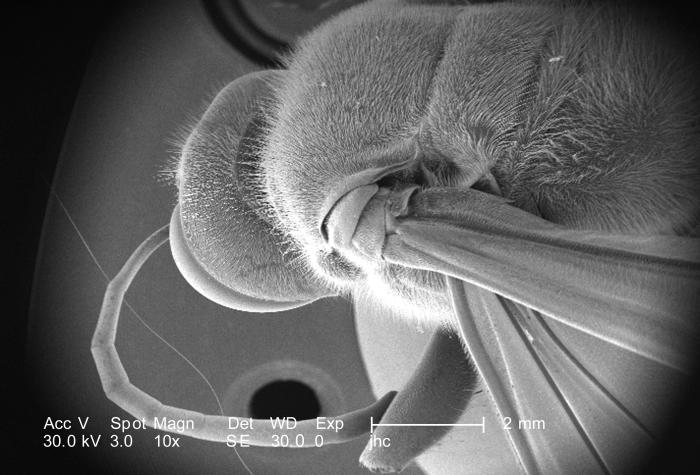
Under a very low magnification of only 10X, this scanning electron micrograph (SEM) depicted some of the anatomical exoskeletal morphology found at a point on an unidentified hornet where its left wing assembly attached to its thorax. Note the complex folding of the wing, which is used to help identify these creatures, as well as a number of wing veins that not only serve to carry its blood, known as 'hemolymph' throughout the structure, but due to their turgidity, act as wing struts, offering support to this organ of flight.